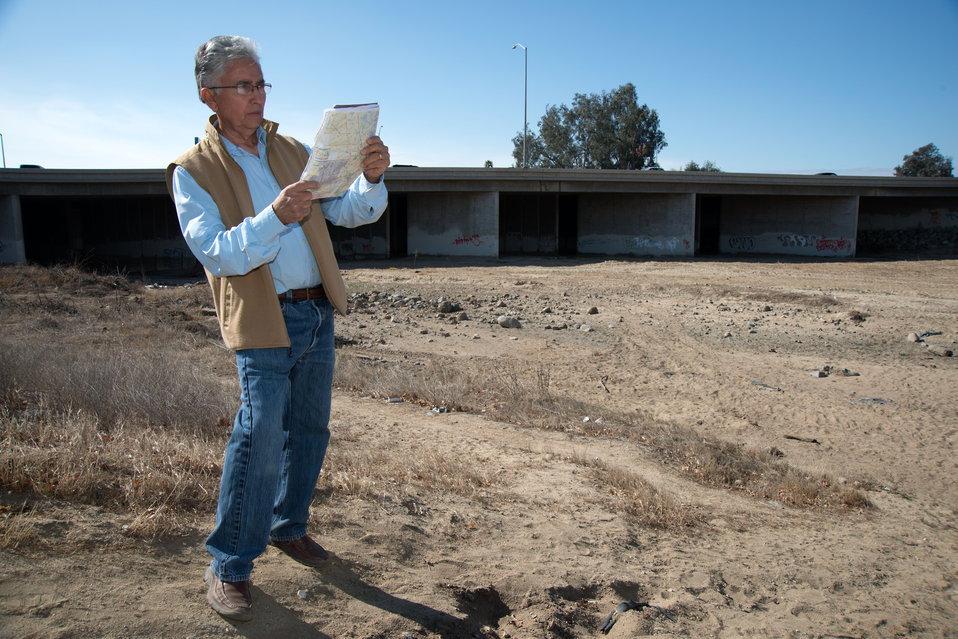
Retired U.S. Department of Agriculture (USDA) Natural Resource Conservation Service (NRCS) soil conservationist Raul B. Ramirez observes drought conditions in Kern County, CA on Wednesday, Feb. 26, 2014.